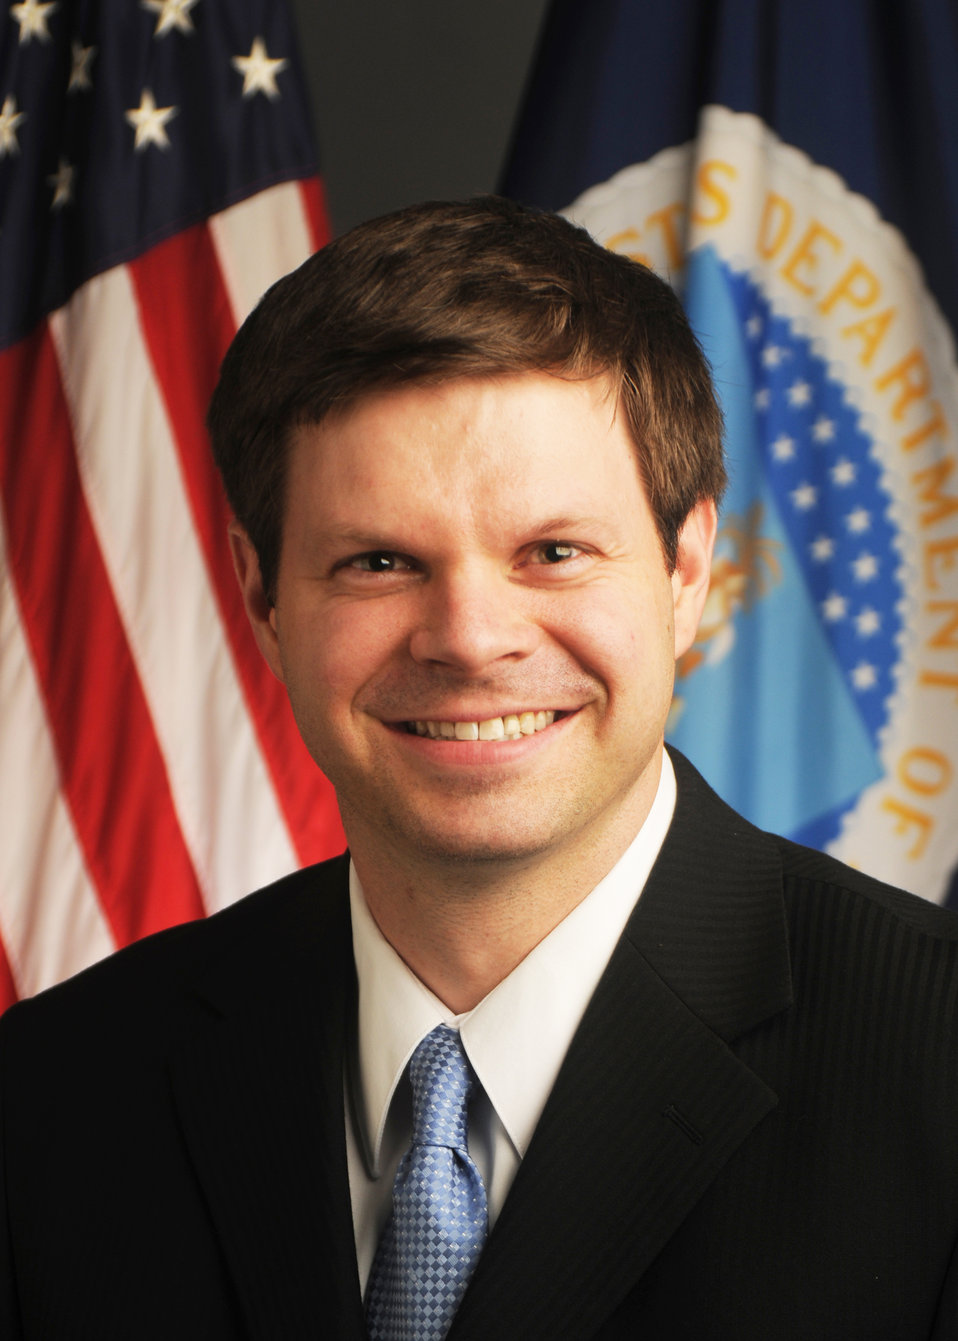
09di1140-003 Deputy Administrator Farm Service Agency Brandon Willis

Portrait Brandon Willis, Deputy Administrator FSA .